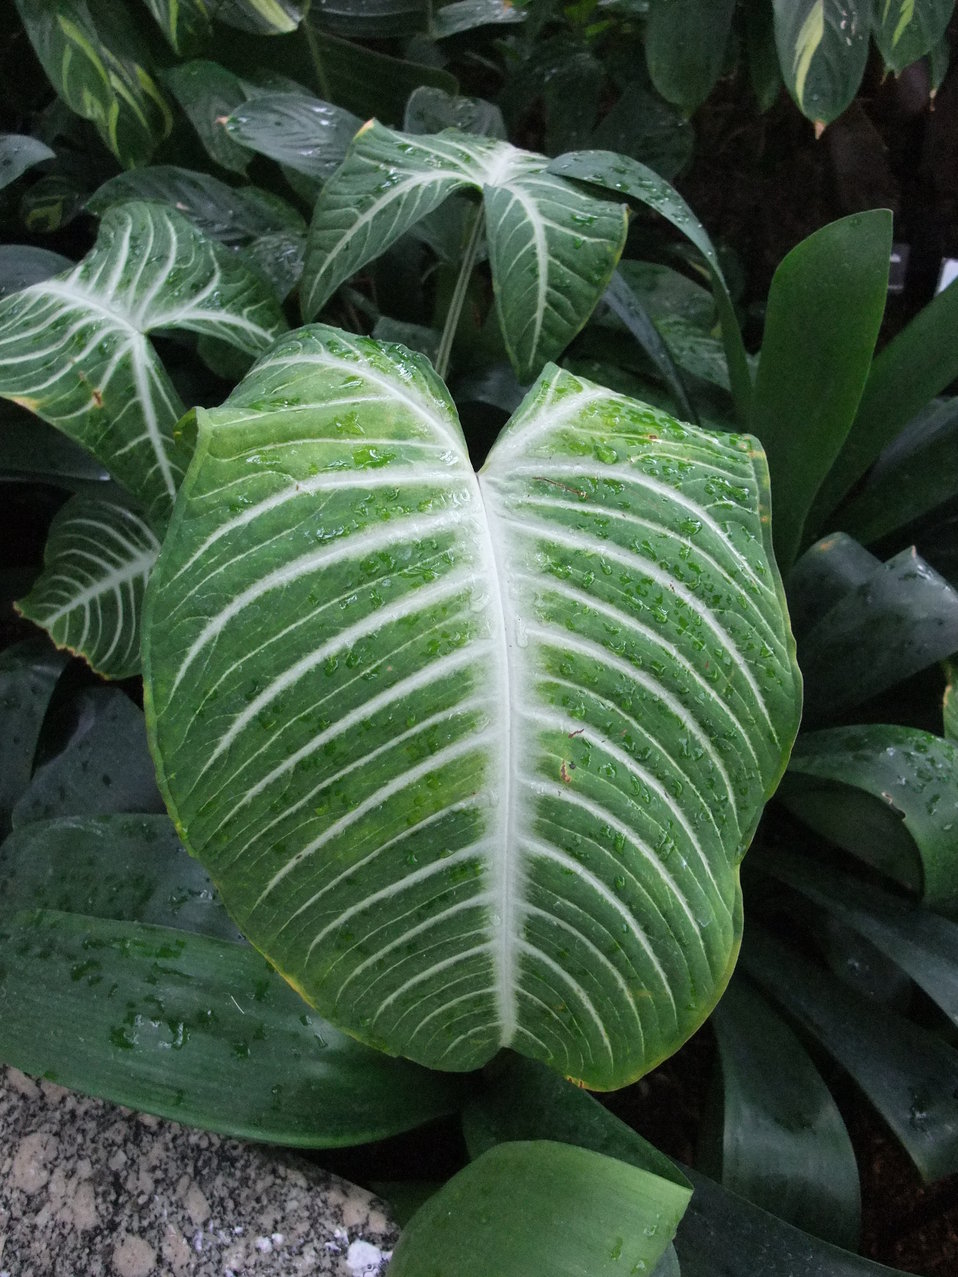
A photograph of Xanthosoma lindenii 'Magnificum'.